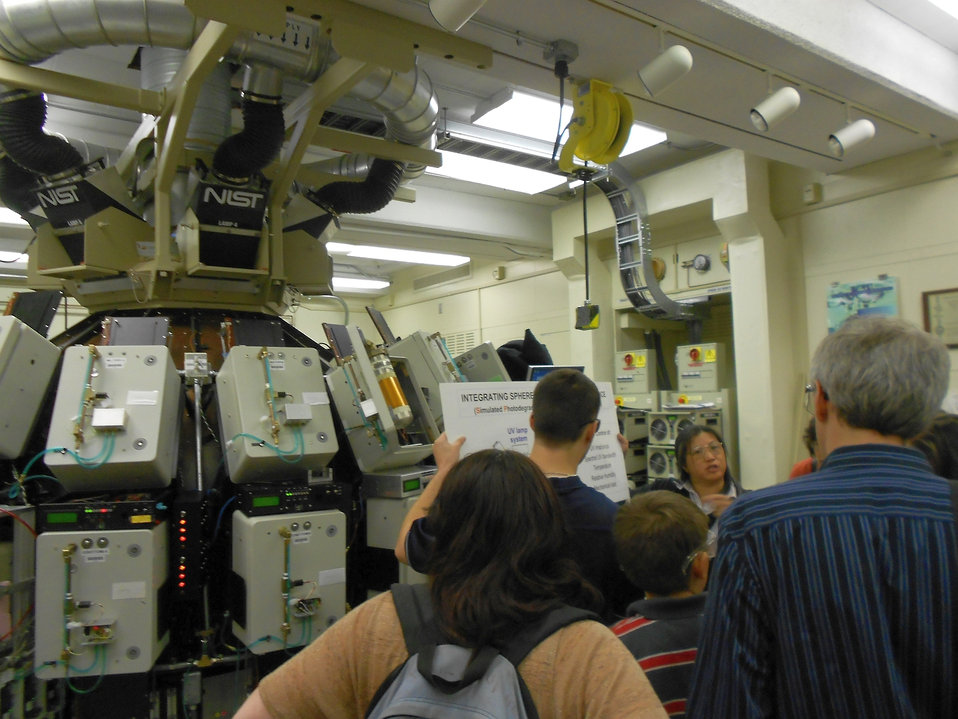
Rochester Community and Technical College Tour

Dr. Li-Piin Sung (right, facing camera) a physicist with the NIST Engineering Laboratory’s Materials and Construction Research Division, explains the workings of the NIST Integrating SPHERE which stands for Simulated Photo-degradation via High Energy Radiant Emission to students and faculty from Rochester Community and Technical College in Rochester, MN. The SPHERE enables scientists to create and control a number of environmental pressures, including sunlight and humidity. Measuring how well materials perform under various weather conditions allows industry researchers to make improvements in future products.